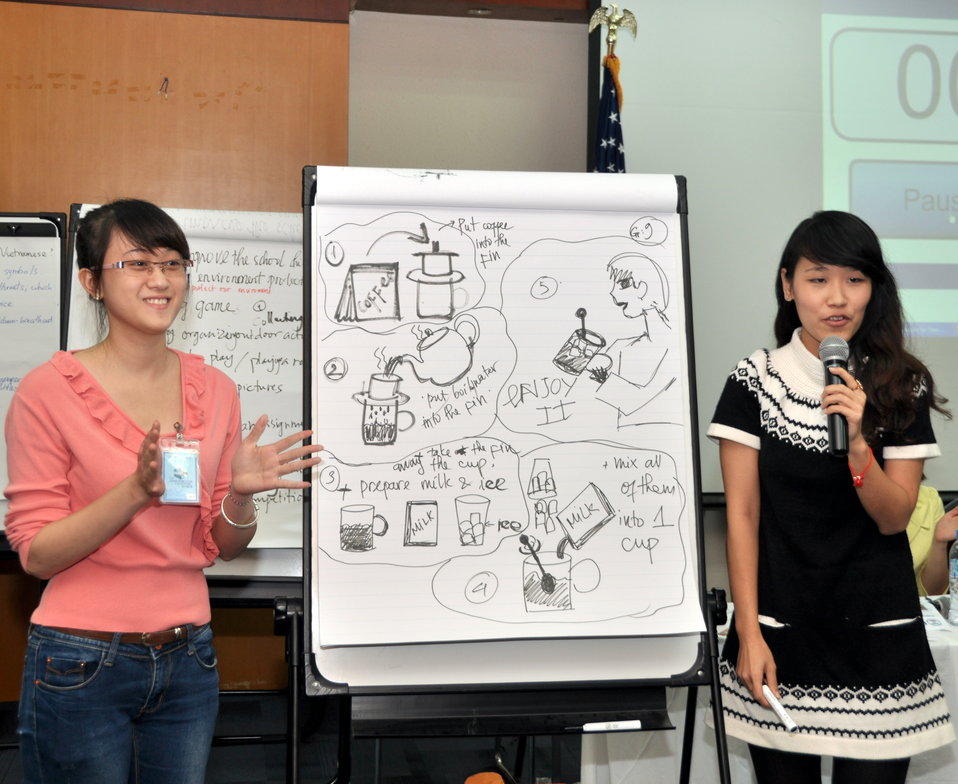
Students join the ‘USAID and Higher Education in Vietnam’ talk

Photo: @USAIDVietnam, November 19, 2012